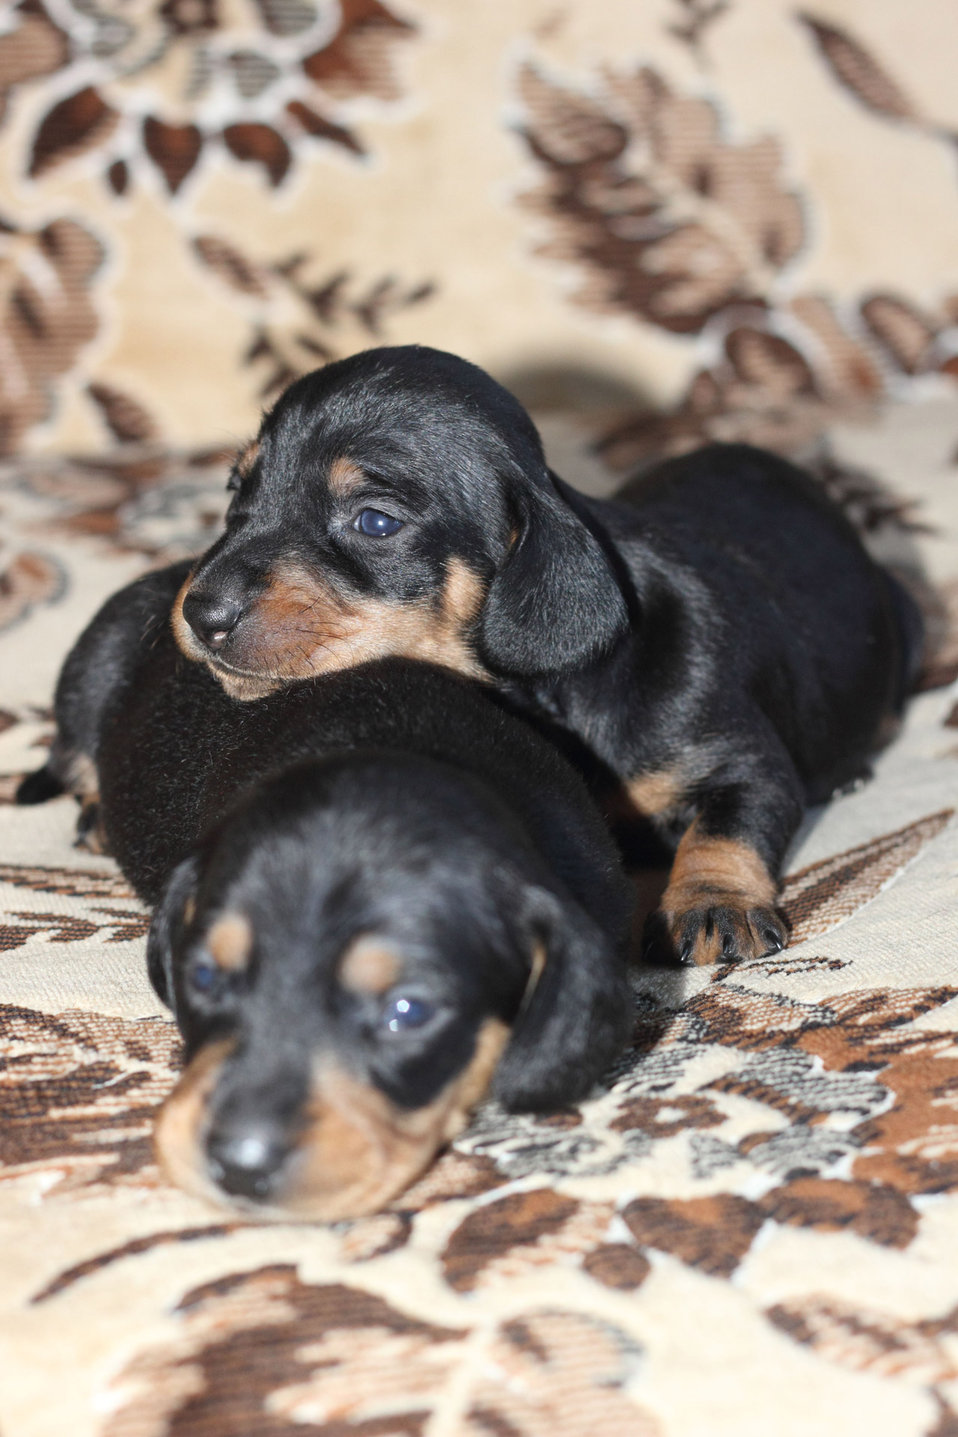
Puppies

Portrait of dachshund puppies..